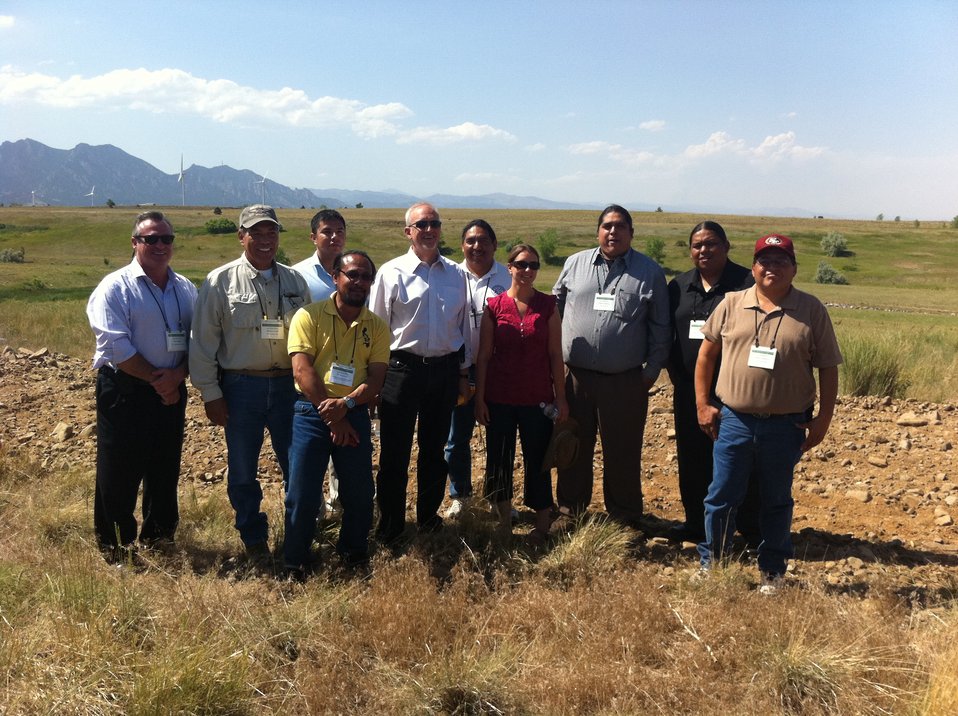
EM tribal leader meeting June 18 2012